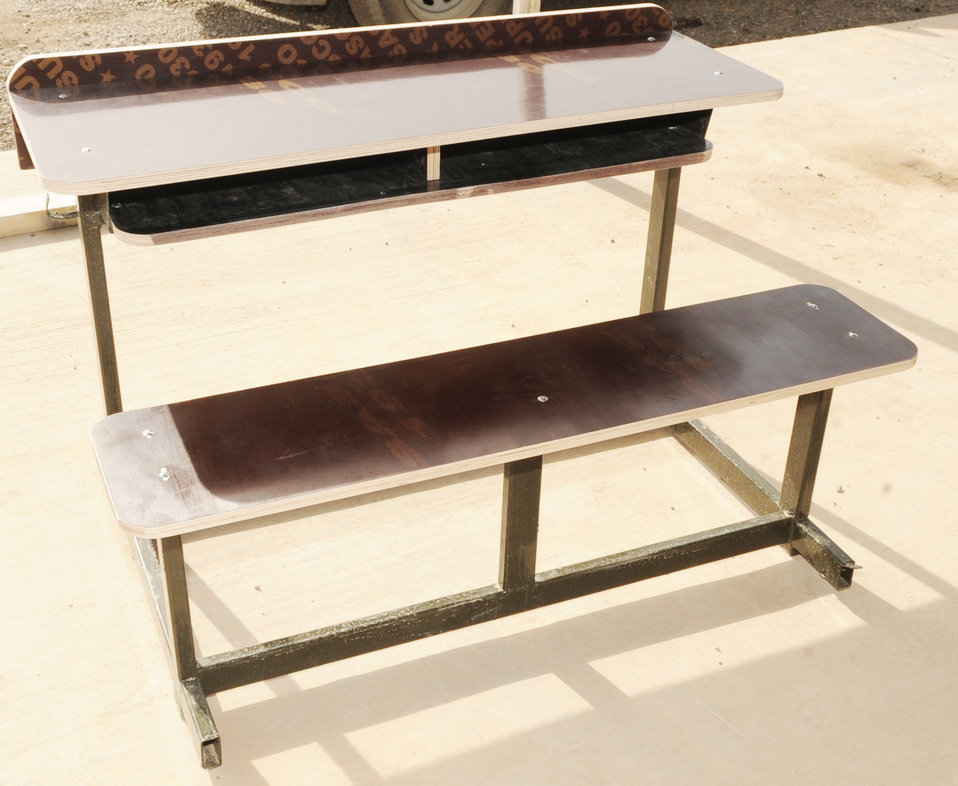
Kirkuk Airmen build desks for Iraqi children

Volunteers from the 506th Expeditionary Civil Engineer Squadron sand down pieces of wood during assembly of school desks for local Iraqi children March 6, 2010, at Kirkuk Regional Air Base, Iraq.